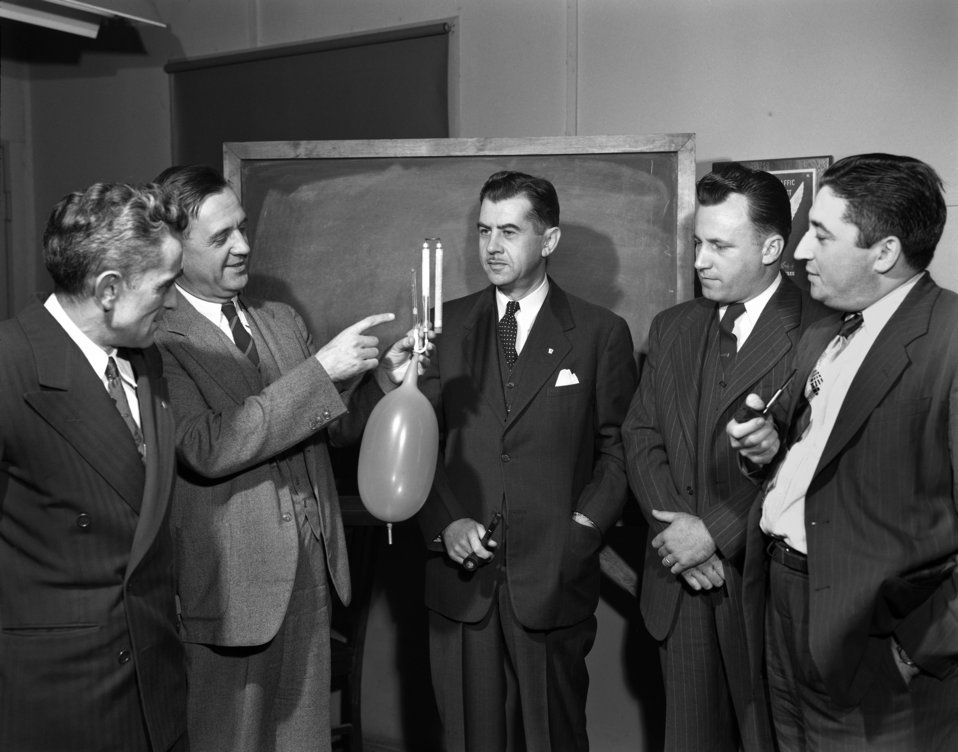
Intoximeter Oak Ridge 1947

4075-2 DOE Photo Ed Westcott 12-11-1947 L to R Dr. Forrester, Rothermel, Miller, Vettel, and Dr. Rossman Oak Ridge Tennessee